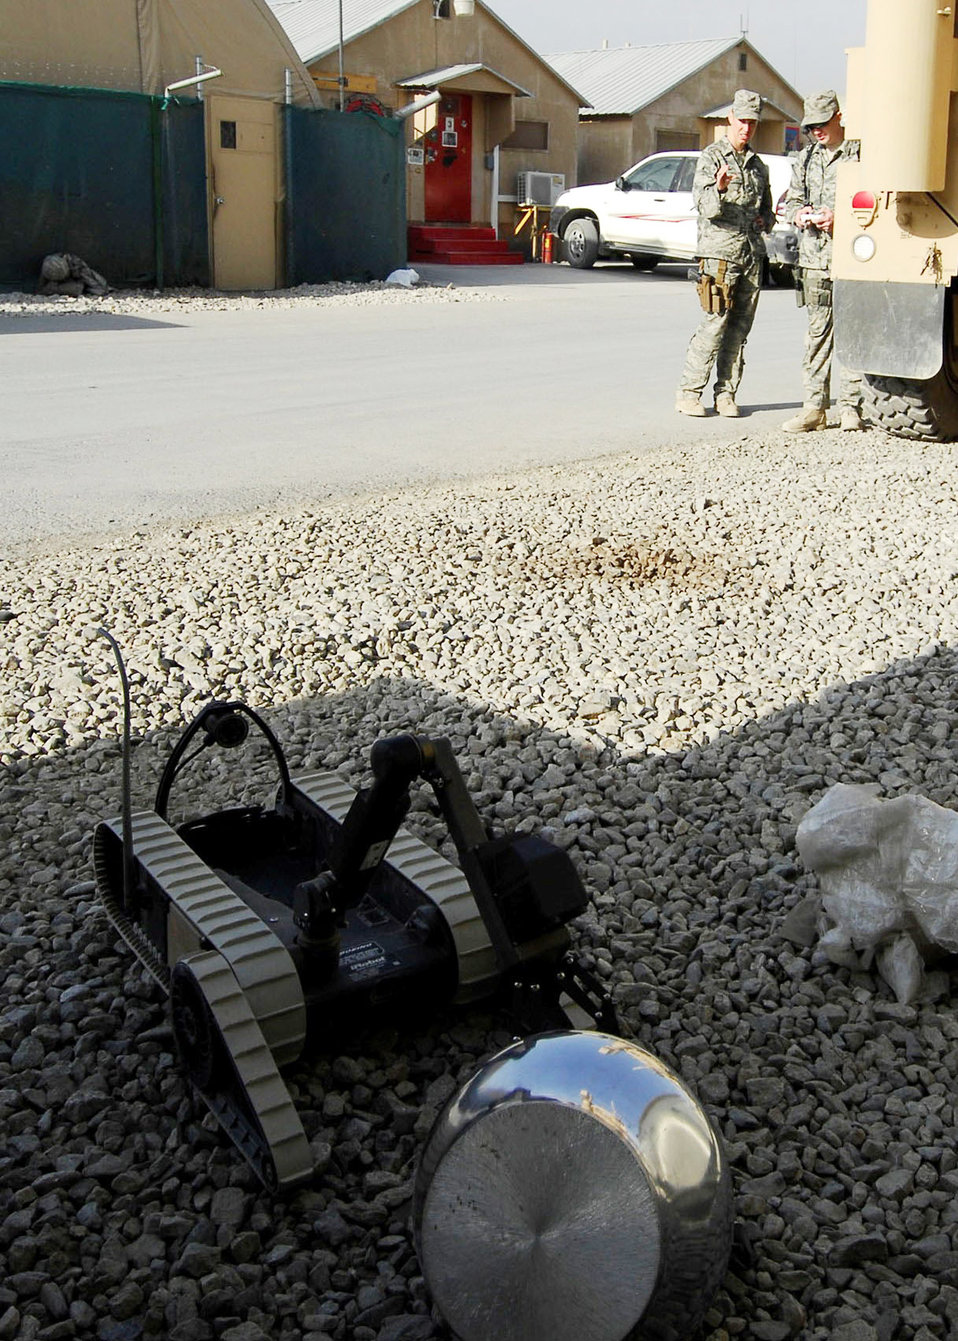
The weapons of warfare adapt with the age of Airmen

Staff Sgt. Elizabeth Spradley (left) and Senior Airman James Dobrynski, explosive ordnance disposal technicians at Bagram Airfield, Afghanistan, work together to have a robot pick up a mock improvised explosive device during training Oct. 26, 2009. The EOD Airmen are joint expeditionary tasked Airmen attached to the 741st EOD Battalion. Sergeant Spradley, an Albuquerque, N.M., native, is deployed from Spangdahlem Air Base, Germany. Airman Dobrynski is deployed from Luke Air Force Base, Ariz., and hails from St. Louis, Mo.